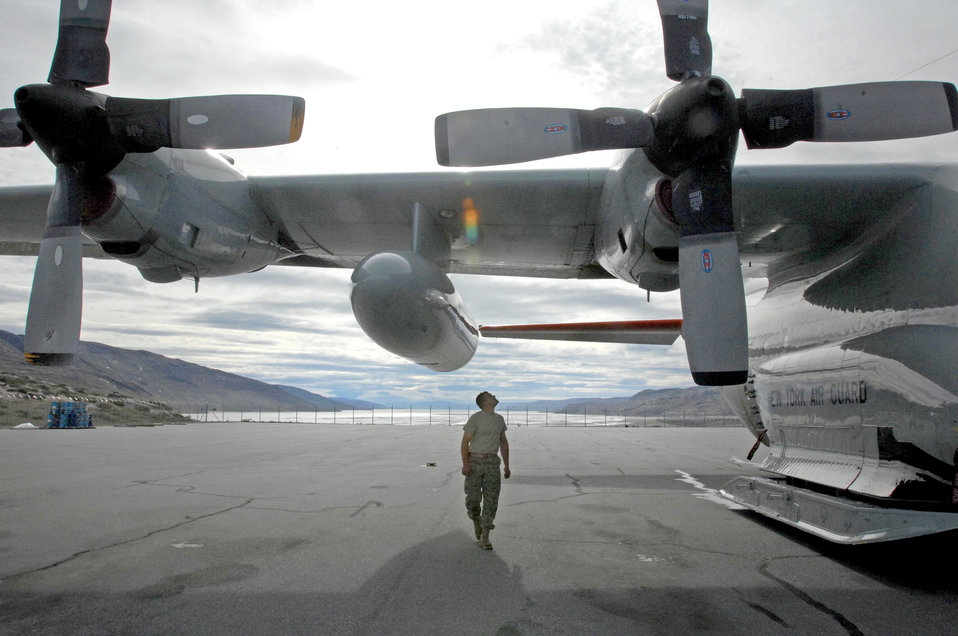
Checking for signs of damage

Staff Sgt. Kevin Byrns walks around the ski-equipped LC-130 Hercules following a mission July 29, 2010, to one of the remote science outposts in Greenland. Sergeant Byrns is the crew chief for the New York Air National Guard's 109th Airlift Wing.